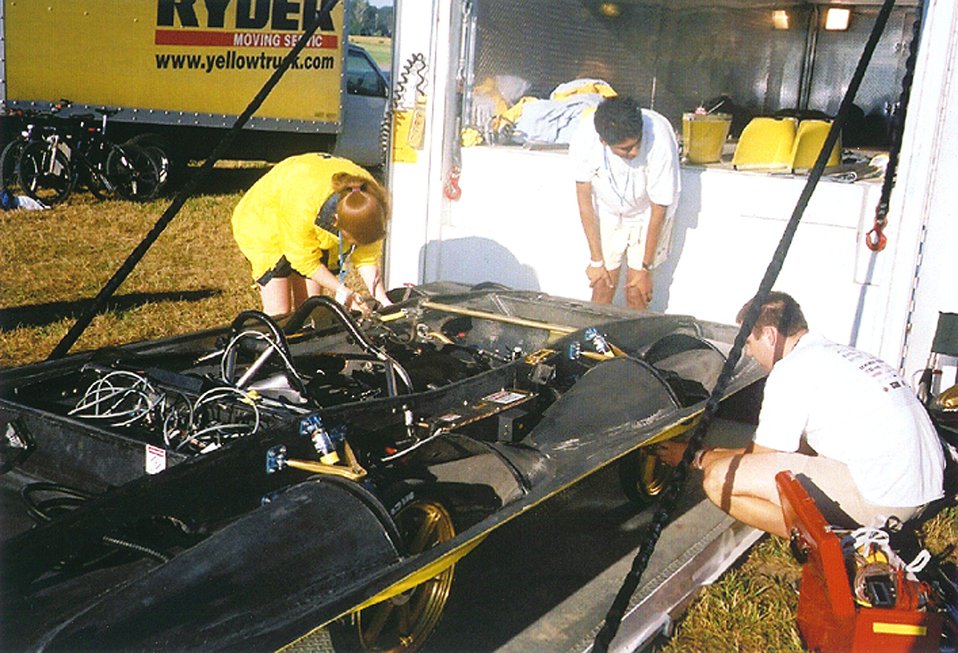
TEAM MEMBERS INSPECTING THE CARBON COMPOSITE BODY OF THE CAR.

THE AMERICAN SOLAR CHALLENGE (SUNRAYCE) 2001, THE LONGEST SOLAR CAR RACE IN THE WORLD, IS A BIENNIAL EDUCATIONAL SPORTING EVENT IN WHICH UNIVERSITY TEAMS, COMPANIES, AND CLUBS FROM AROUND THE WORLD COMPETE TO BUILD AND RACE SOLAR POWERED CARS ACROSS THE UNITED STATES. THIS YEAR THE RACE BEGAN IN CHICAGO, ILLINOIS ON JULY 15, 2001 AND WAS COMPLETED ON JULY 25, 2001 IN CLAREMONT, CALIFORNIA, TRAVELING ALL ALONG OLD ROUTE 66.